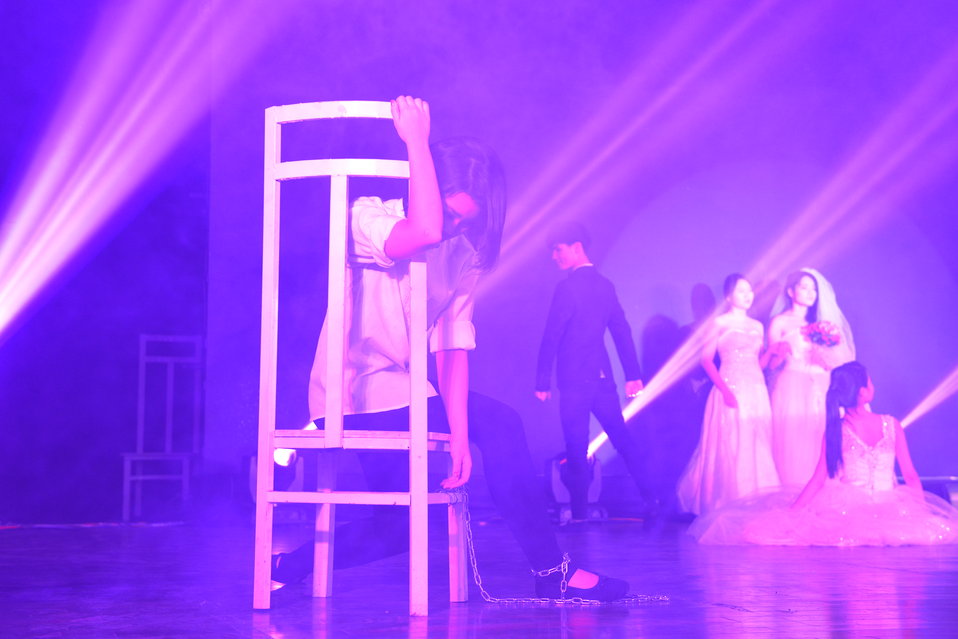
Performance at iSee LGBT Event

USAID Vietnam